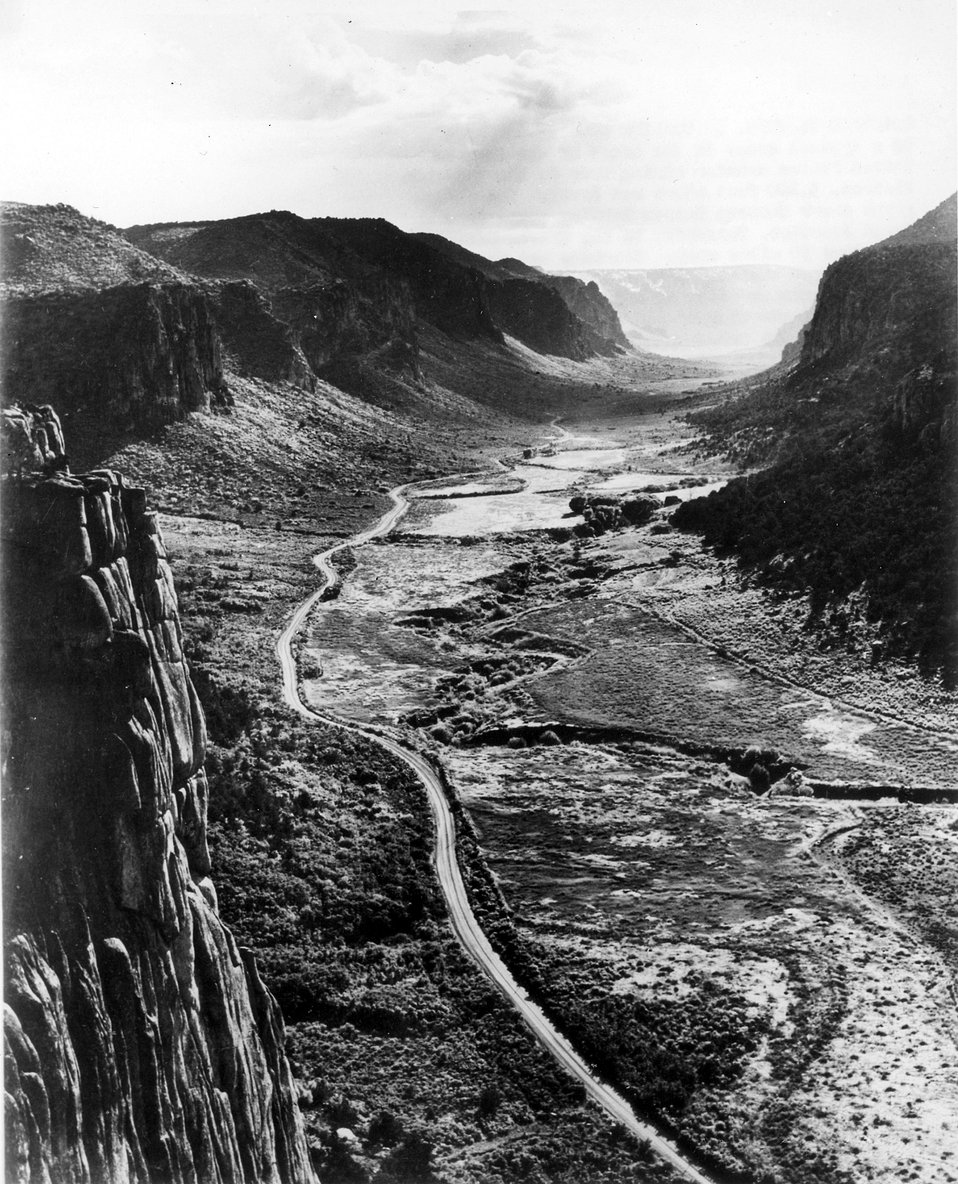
Using a geological pick, Ed Russel, a geologist of Casper, Wyoming's Conoco uranium exploration project examines samples of rocks taken from an outcrop on a Powder River Basin site in Wyoming. c. 1976